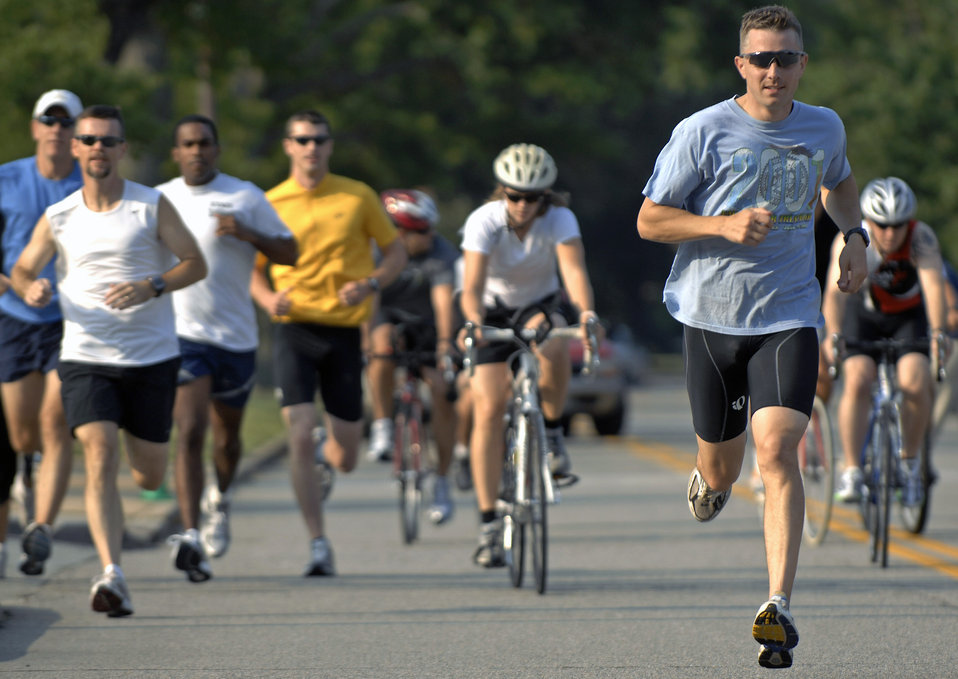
ACC runners seek 'niki' at Air Force marathon

Maj. Ryan Krietsch led all participants in a duathlon sponsored by the 1st Force Support Squadron at Langley Air Force Base, Va., Aug. 15. A duathlon is an 8-mile exercise designed to challenge each participant's physical endurance with cycling and running. The 1st FSS organizes an event monthly to continue encouraging physical fitness as the Air Force exercises the fit-to-fight mentality. Major Krietsch is assigned to Air Combat Command Operations.